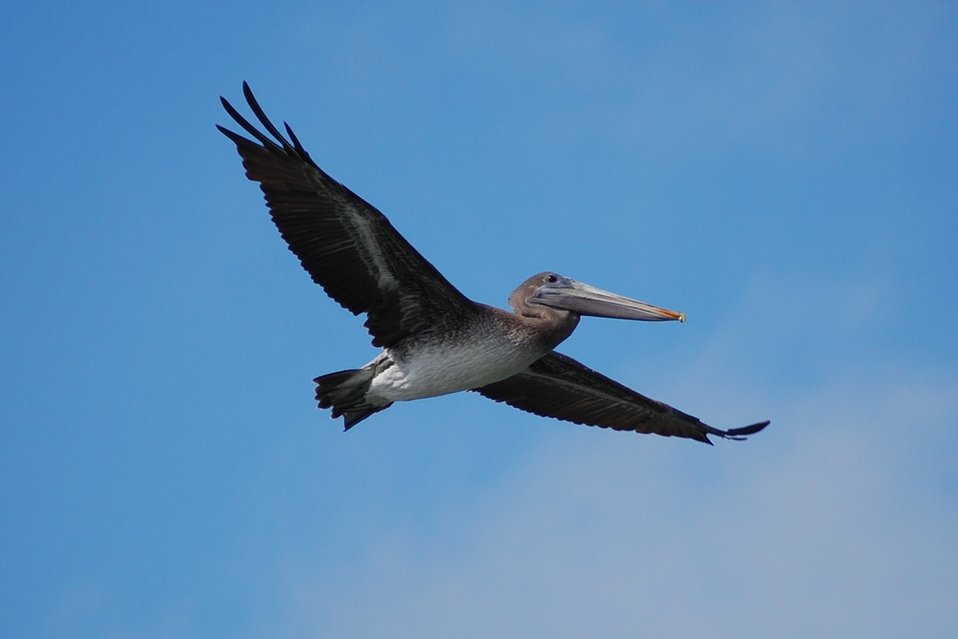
Pelican in flight seen from front right